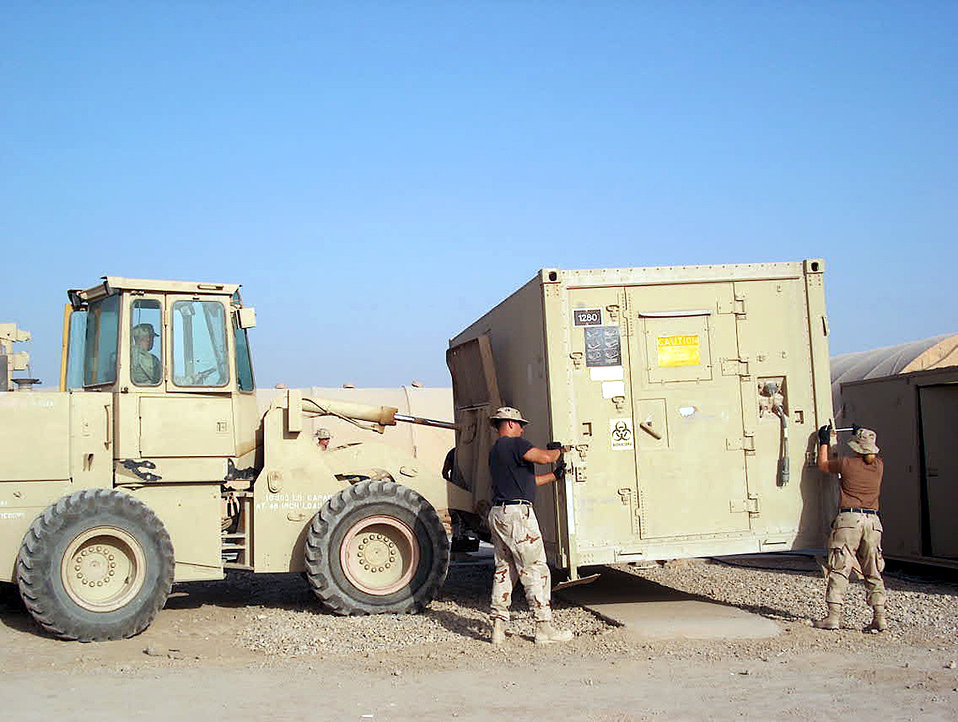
Operation Iraqi Freedom

ALI BASE, Iraq -- Airmen prepare a storage container for permanent placement. The new container is part of the recent expansion of the base medical clinic here.